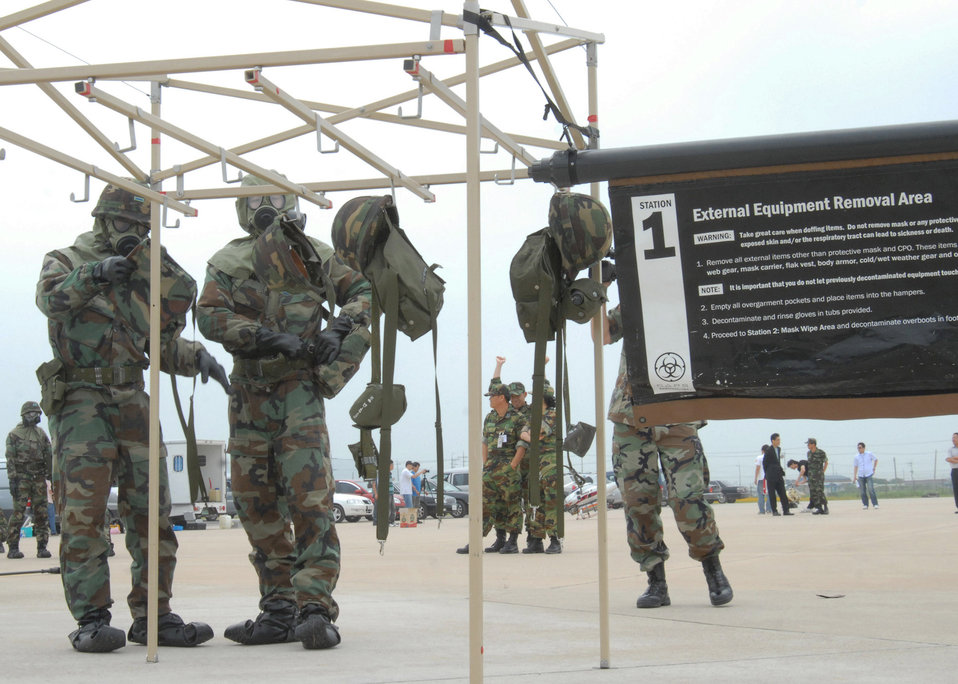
South Korean army UAVs enhance training at Kunsan

Two South Korean army soldiers remove their external equipment at the first decontamination station June 24 at Kunsan Air Base, South Korea. South Korean army soldiers demonstrated the capabilities of their nuclear, biological and chemical detection technology during a two-day combined training session here June 23 and 24.